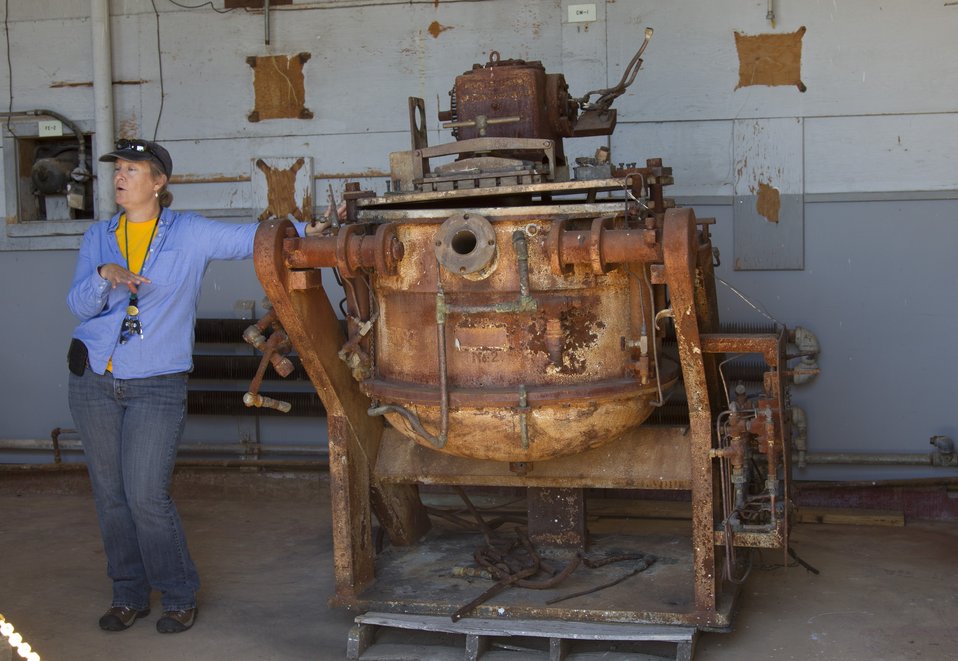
DURING THE EMPLOYEE FAMILY CELEBRATION AT LOS ALAMOS NATIONAL LABORATORY, THE HISTORIAN EXPLAINS THAT CANDY COOKER WAS USED FOR MANHATTAN PROJECT SCIENCE EXPERIMENTS.